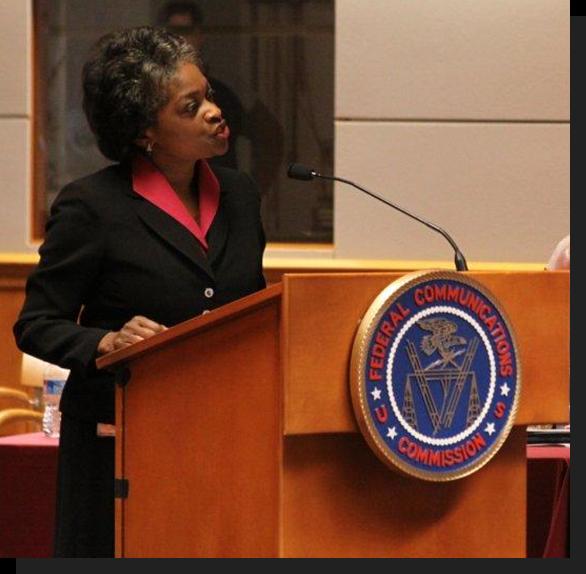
Commissioner Mignon Clyburn, FCC

Giving welcoming remarks